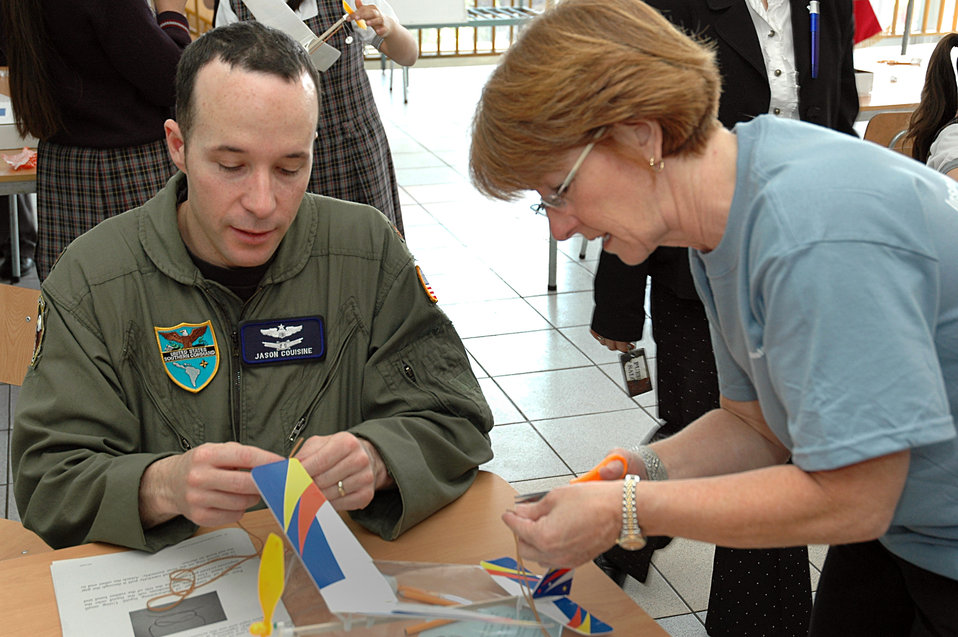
Airmen, Chilean school 'partner' to teach children aviation

Maj. Jason Couisine (left) the Air Force section chief at the U.S. Military Group in Chile, and Arlene Dickson, corporate relations manager at Agilent Technologies, acted as schoolteachers during a guest science class at the Complejo Educacional Esperanza School in Santiago, Chile on Oct. 27. The community outreach event was part of Air Forces Southern's Operation Southern Partner, an all-new program aimed at providing intensive, periodic subject matter exchanges with partner nations in the U.S. Southern Command area of focus. Volunteers from Agilent and the U.S. Military Group worked alongside Air Forces Southern, the Chilean air force and members of the U.S. Embassy to teach local school children the practical applications of scientific principles by building and flying model airplanes.